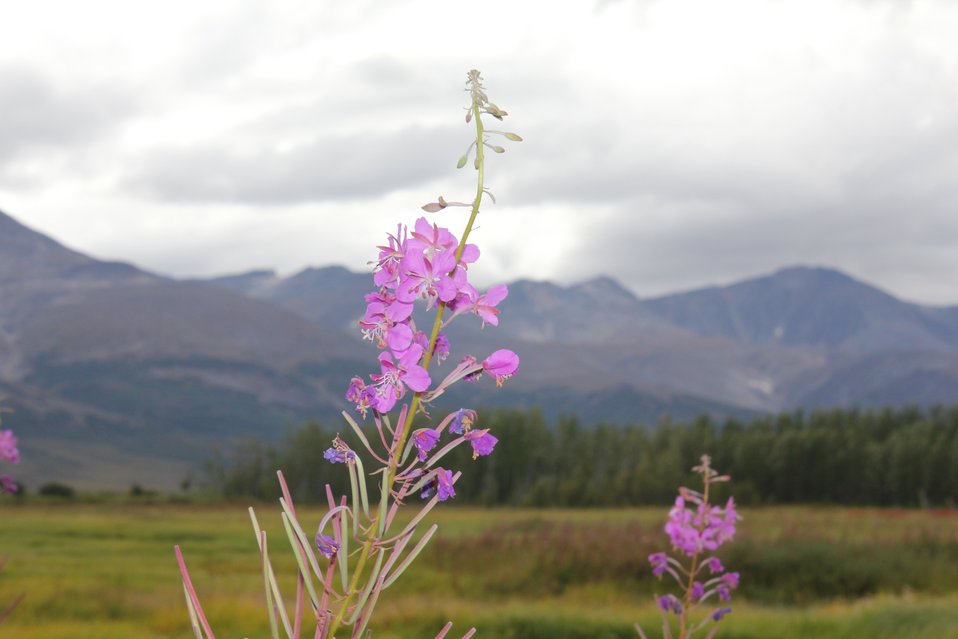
Meadow near Pilgrim Hot Springs with fireweed in foreground.